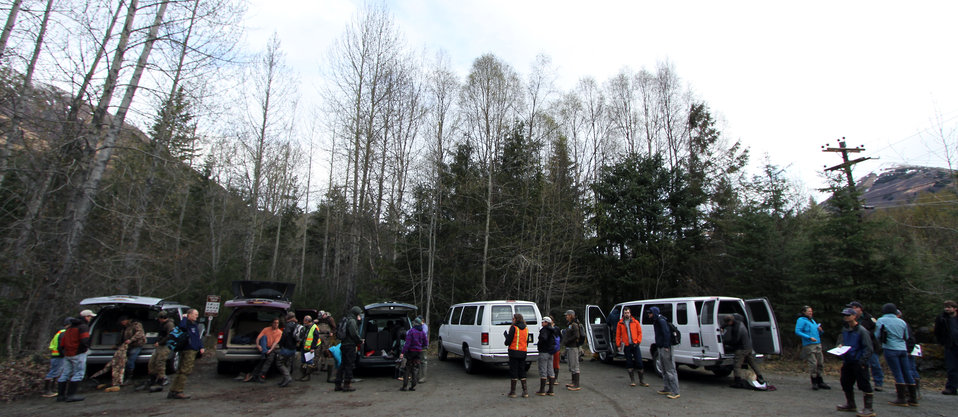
Fish Passage Workshop May 2014

Workshop participants get ready to learn fish passage assessment techniques. Workshop hosts/organizers included the U.S. Forest Service, U.S. Fish and Wildlife Service, and the Alaska Department of Fish and Game. USFWS/Katrina Mueller